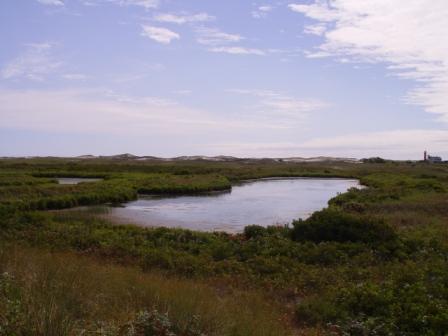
Monomoy National Wildlife Refuge, MA.